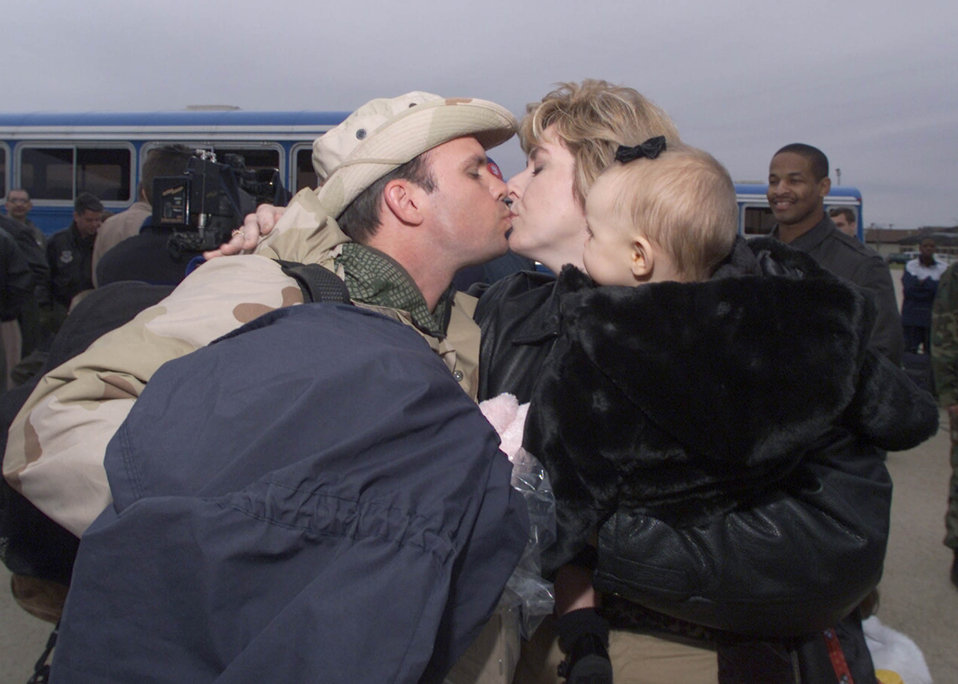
Welcome home

OPERATION ENDURING FREEDOM -- An airman from the 305th Air Mobility Wing at McGuire Air Force Base, N.J., is greeted by his family after returning from a deployed location in support of Operation Enduring Freedom on 17.